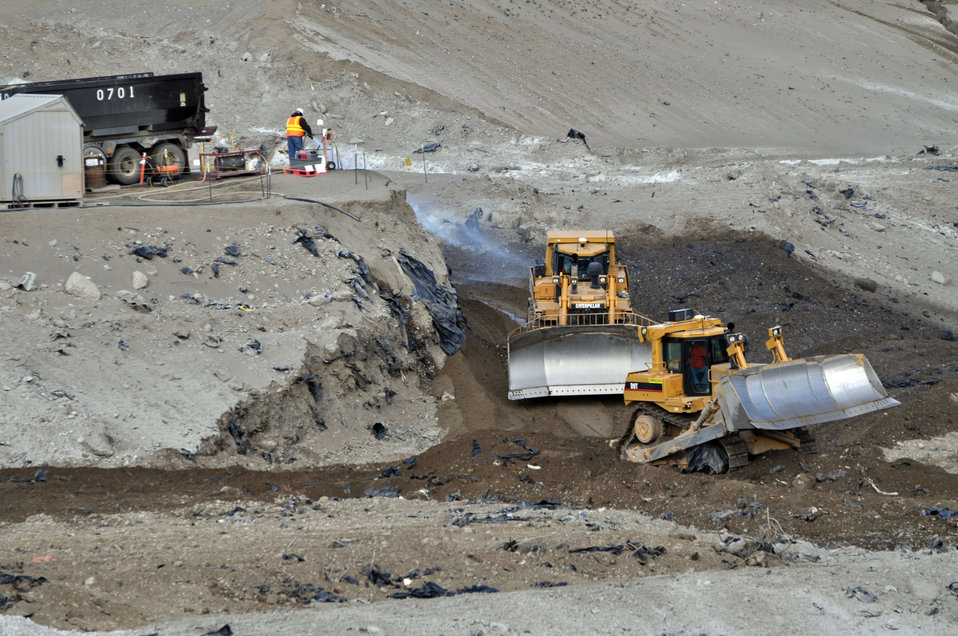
Hanford Recovery Act work

Recovery Act-funded work at the Hanford site.